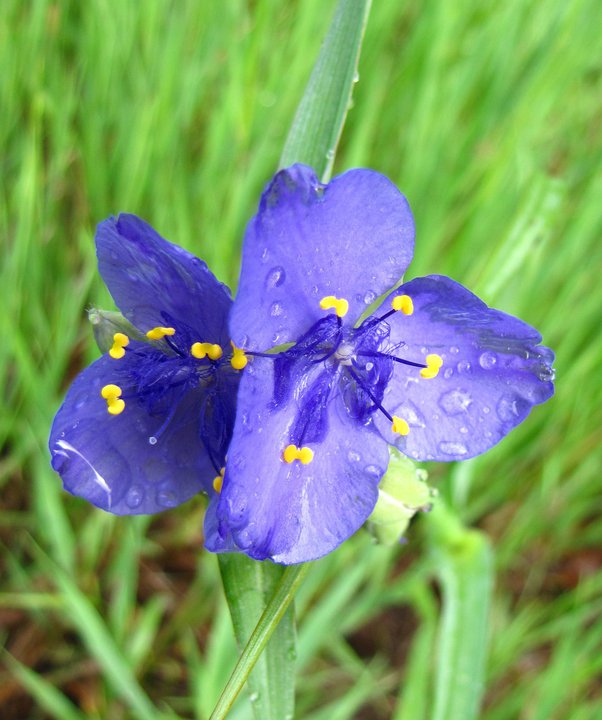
spiderwort

Port Louisa National Wildlife Refuge